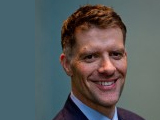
Grant Colfax